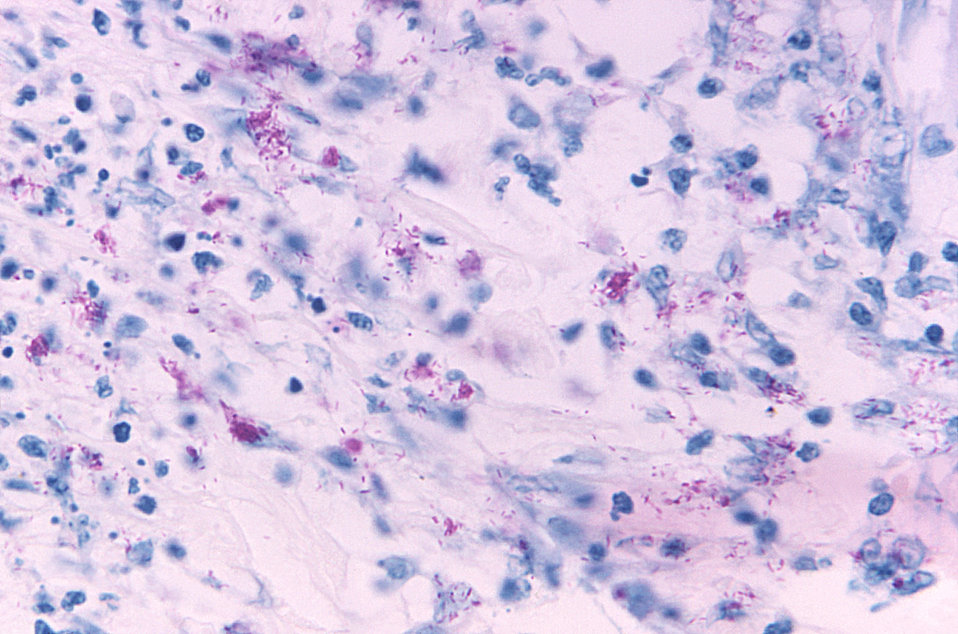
This light photomicrograph revealed some of the histopathologic cytoarchitectural characteristics seen in a mycobacterial skin infection.